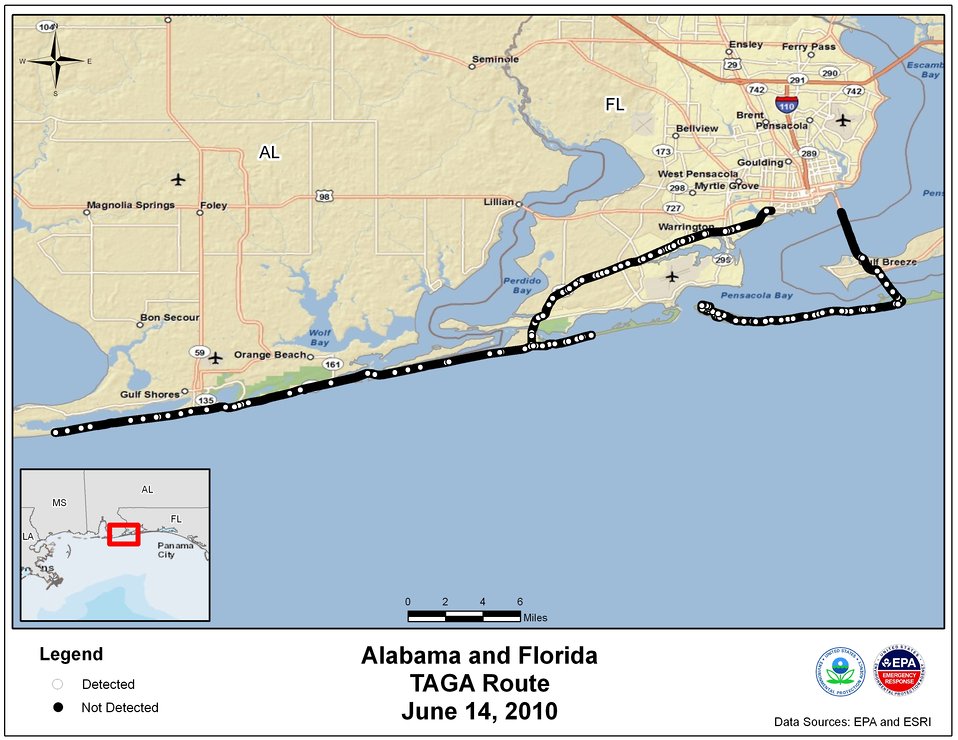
EPA TAGA Air Monitoring Locations June 14, 2010